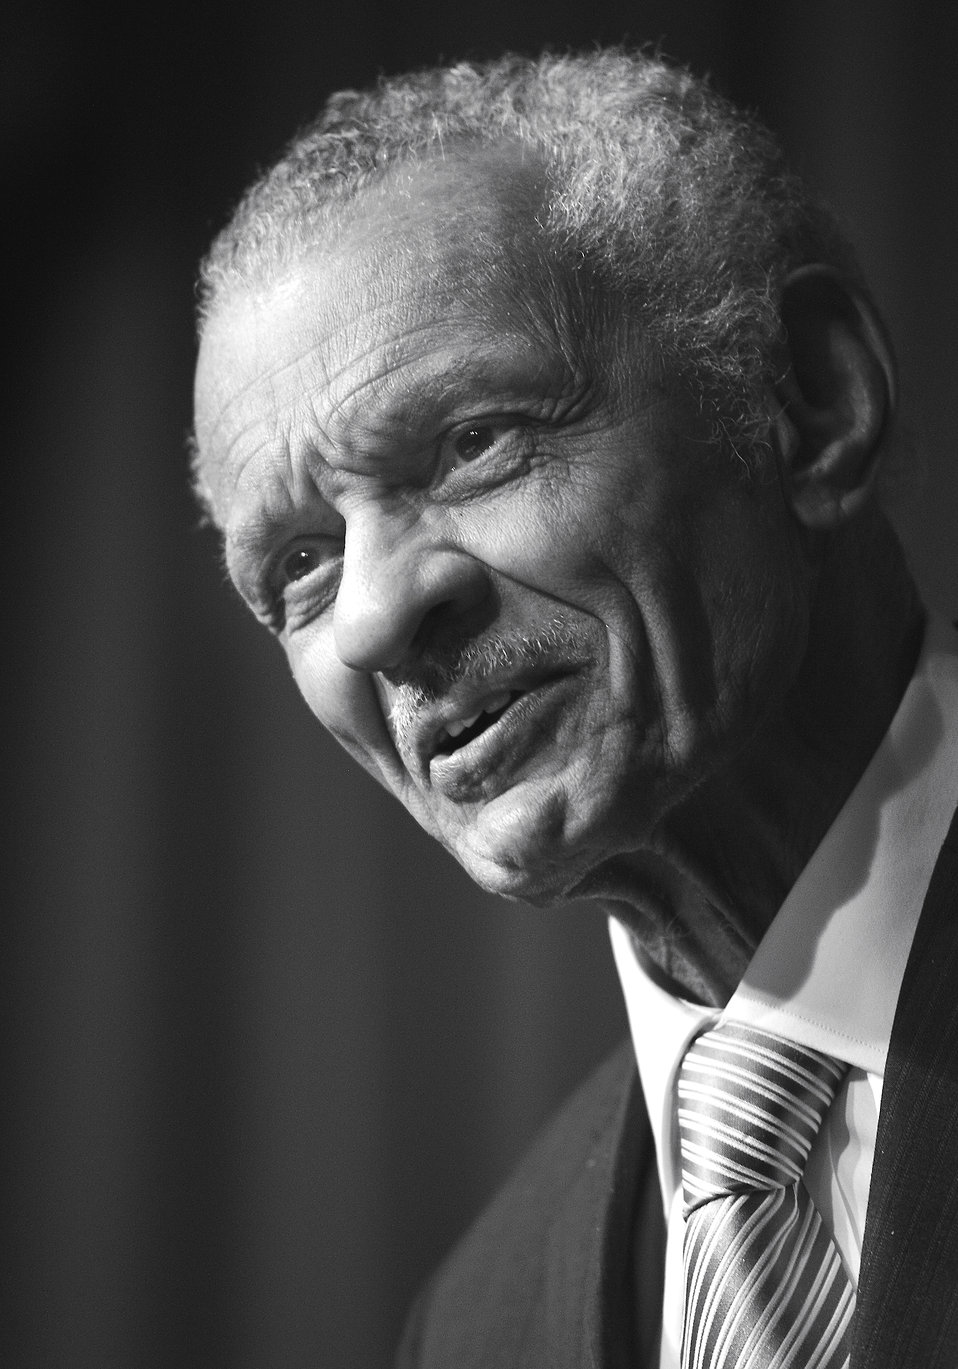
Martin Luther King Jr. Day Celebration at DOE headquarters.